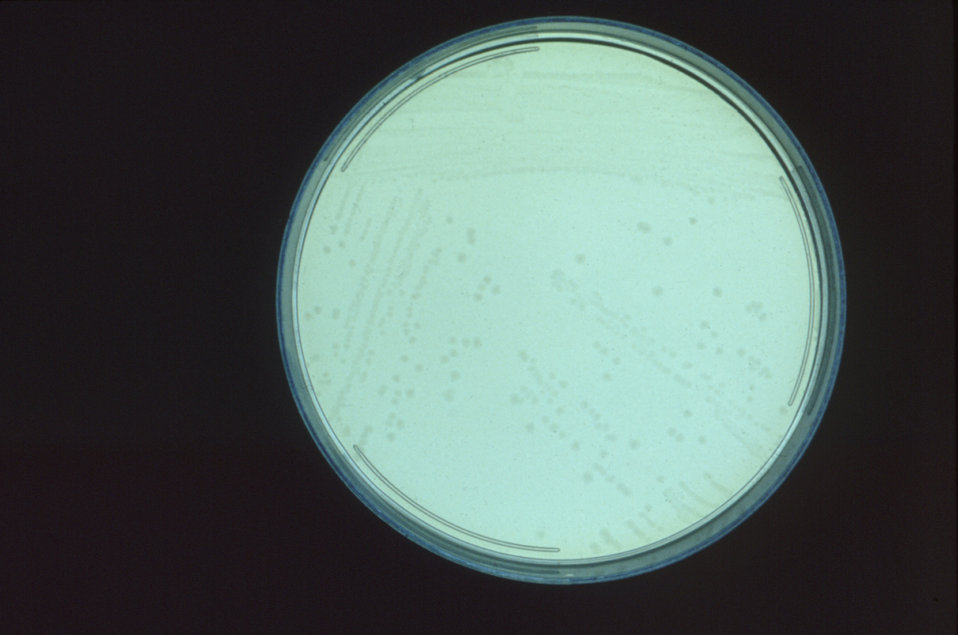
These Clostridium perfringens colonies were cultured on a SPS (Sulfite Polymyxin Sulfadiazine) agar plate.